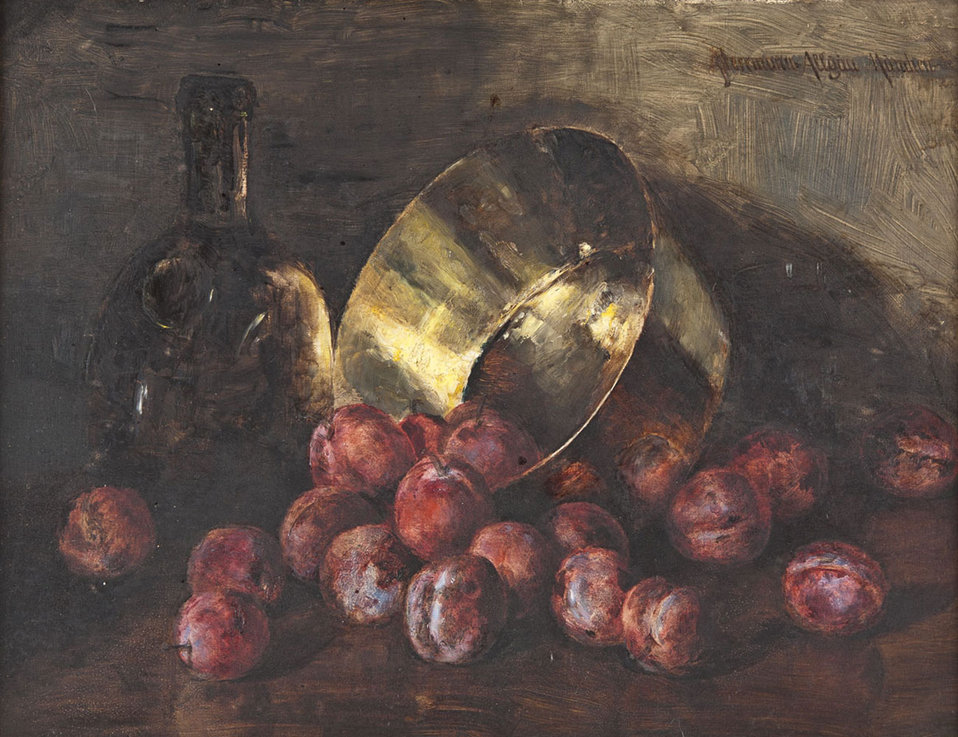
Stillleben mit Pflaumen. Öl auf Holzplatte, 31,5 cm x 41 cm, oben rechts signiert und ortsbezeichnet Herrmann-Allgauer München, verso Ausstellungsetikett der Münchener Künstlergenossenschaft von 1911